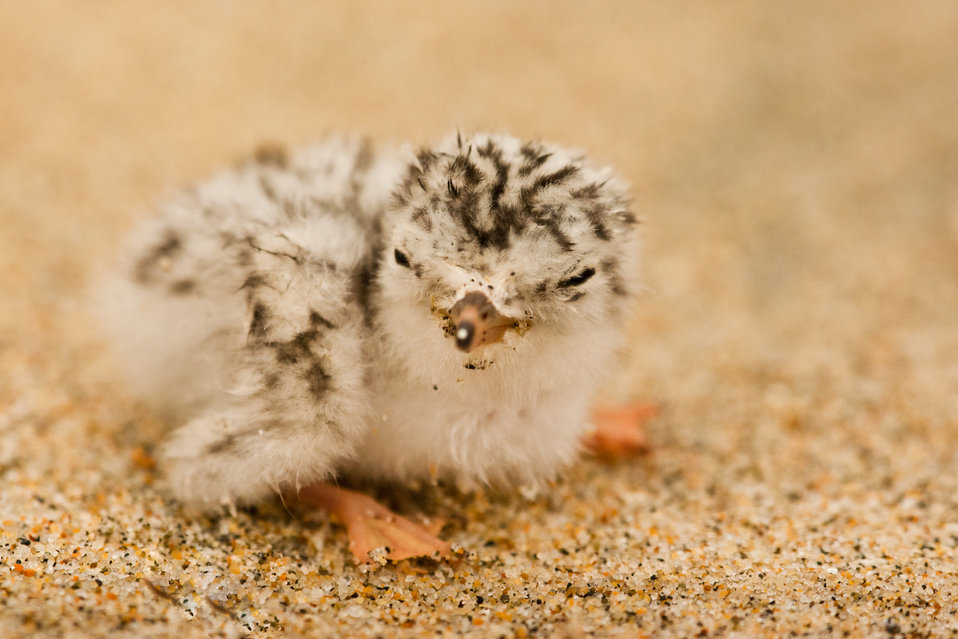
Fuzzy and fragile

California least tern chick is just 1or 2 days old